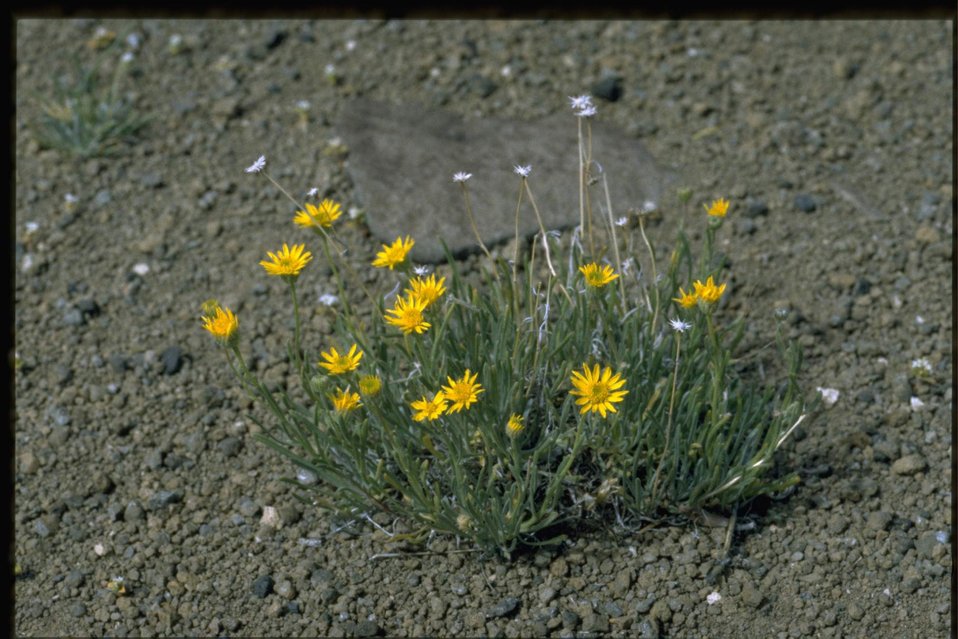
Far shot of arrowleaf balsamroot wildflowers.